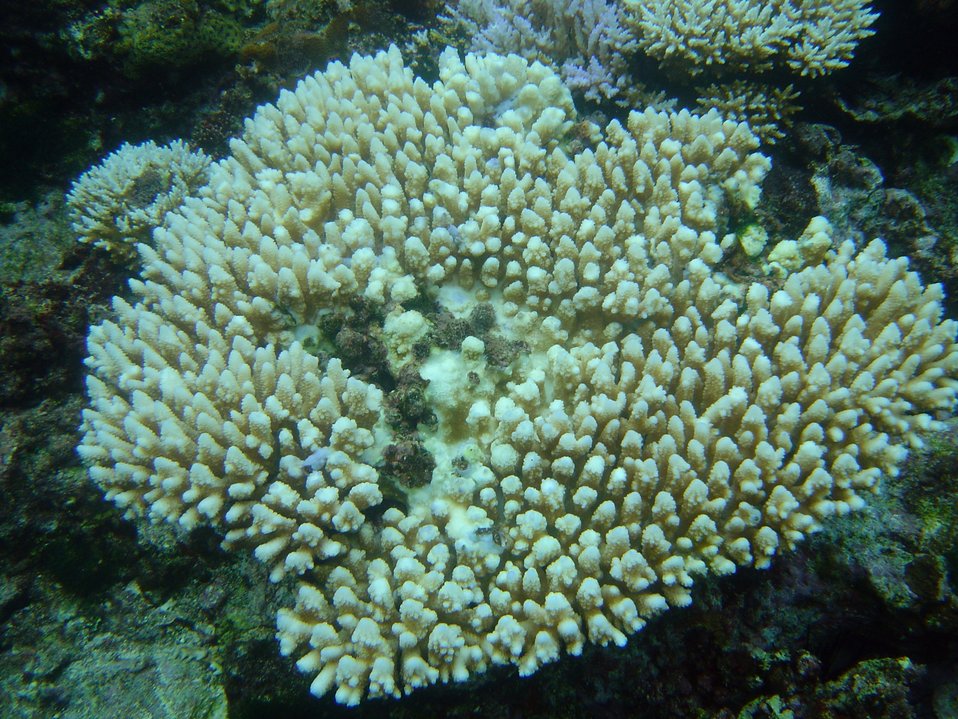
Coral bleaching